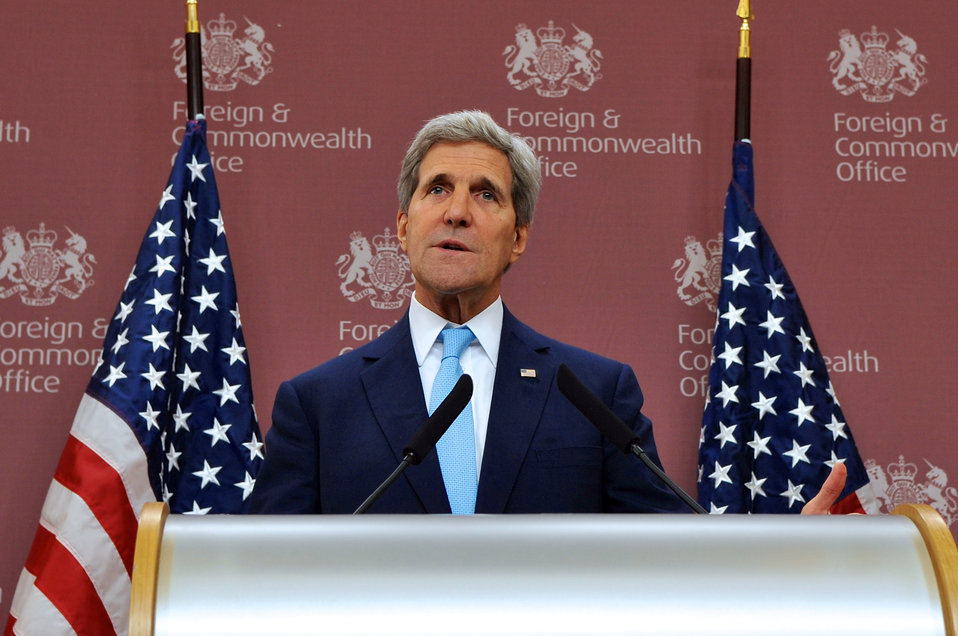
Secretary Kerry Holds a News Conference After London 11 Meeting on Syria in London

U.S. Secretary of State John Kerry holds a news conference after meeting with the London 11 and the Syrian Opposition Coalition in London, United Kingdom, on May 15, 2014.